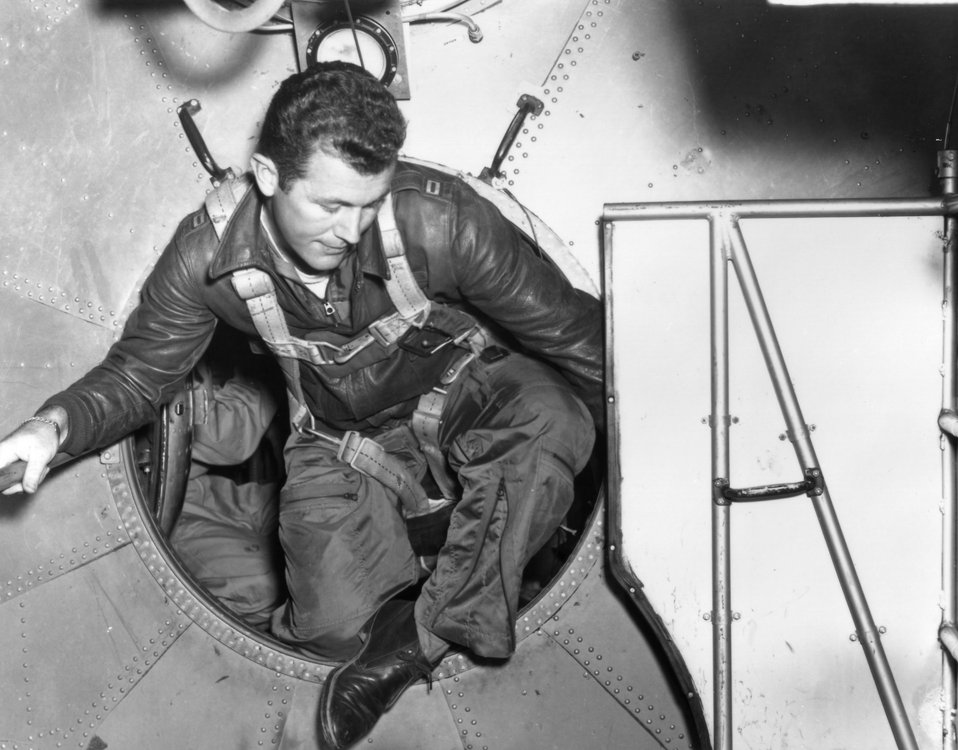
Capt. Yeager transfers to X-1

1940's -- Capt. Charles E.